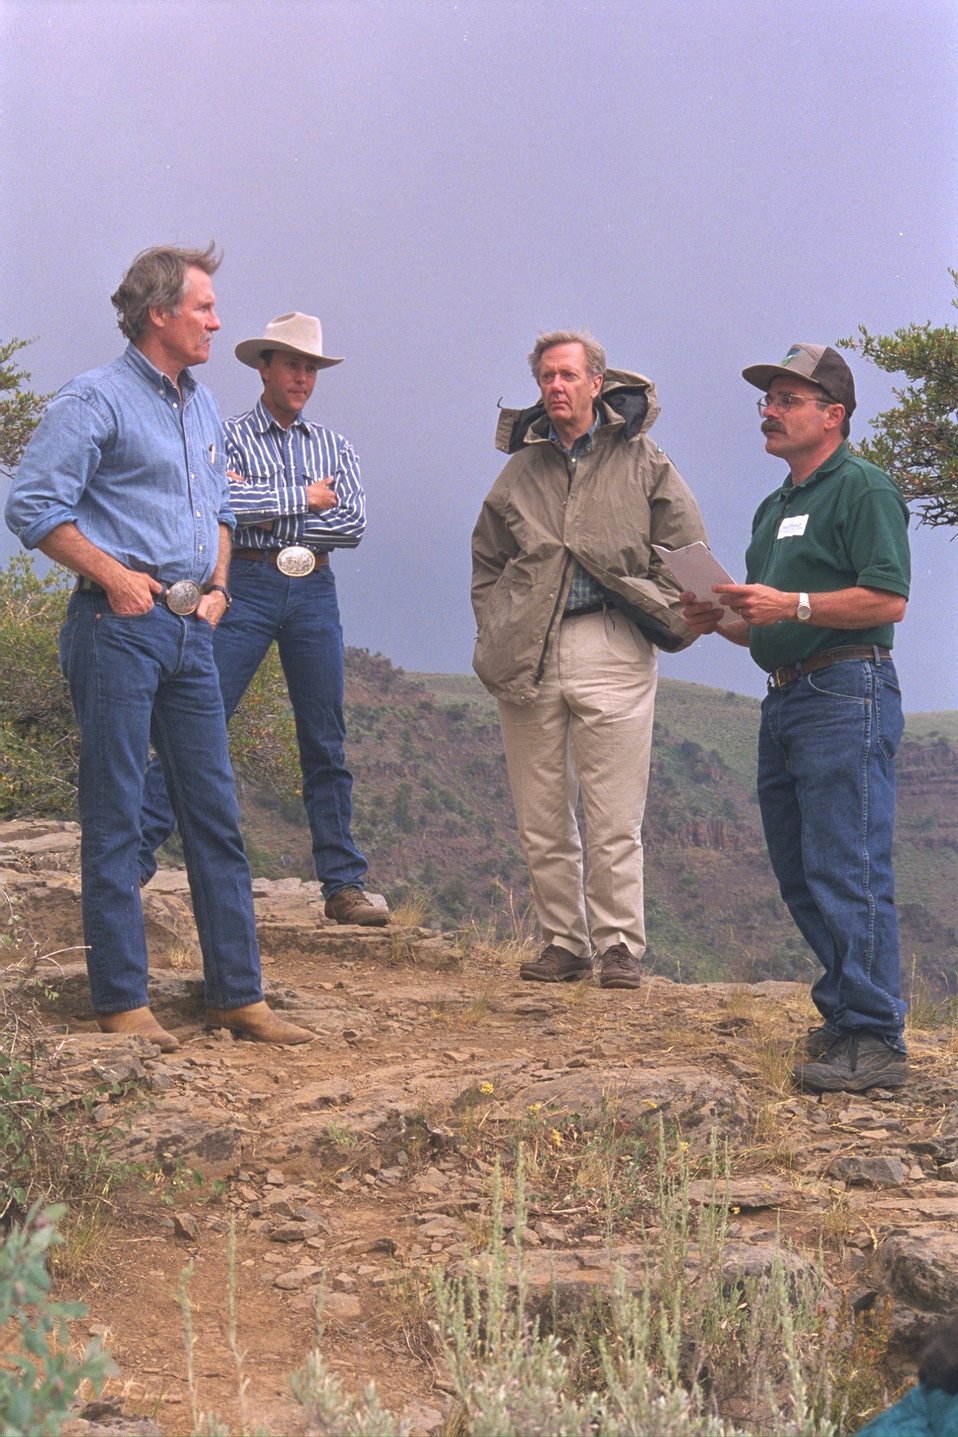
(L-R) Governor Kitzhaber, Stacie Davies, Secretary Babbitt, and David Blackston at Big Indian Gorge.